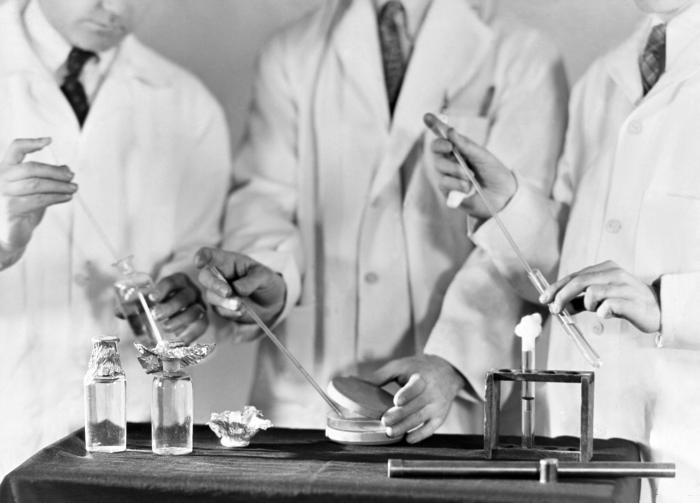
This historic 1931 photograph showed the three steps to be taken in the examination of water for bacteria. Left to right, they are: (1) removing the water sample from the bottle, (2) placing the sample onto a culture plate, and (3) inoculating broth tubes with water samples.